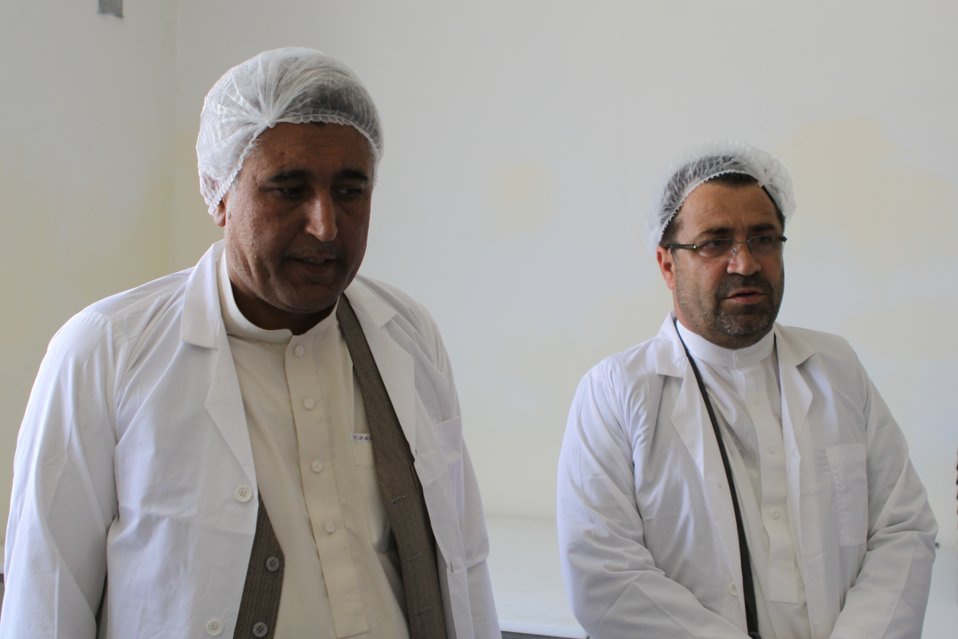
Bolan Poultry Farm